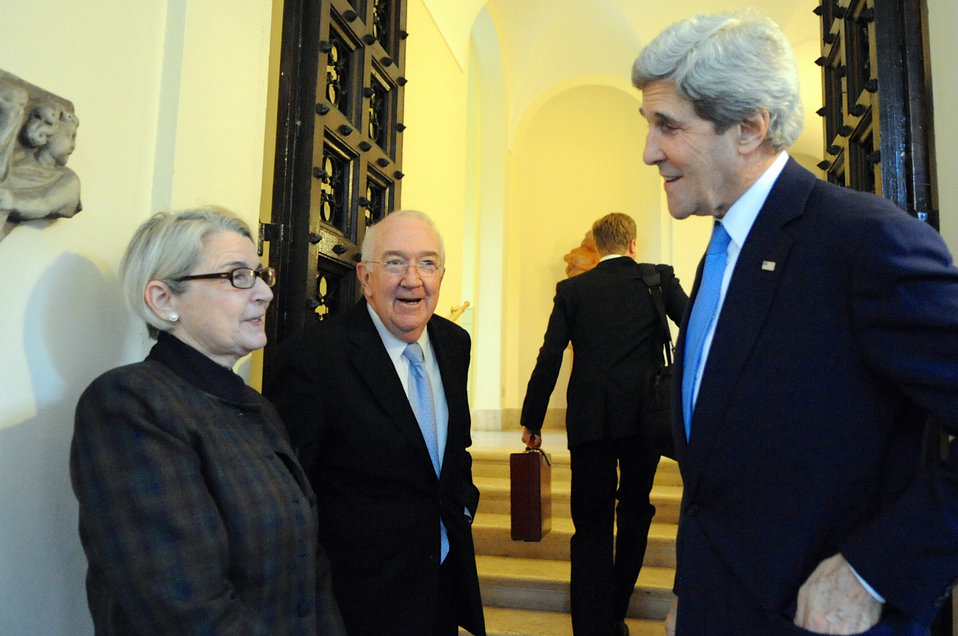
The Hacketts Welcome Secretary Kerry to Chief of Mission Residence for Holy See

U.S. Ambassador to the Holy See Ken Hackett and his wife, Joan, greet U.S. Secretary of State John Kerry as he arrives at the Chief of Mission Residence during a visit to Vatican City and Rome, Italy, on January 14, 2014.